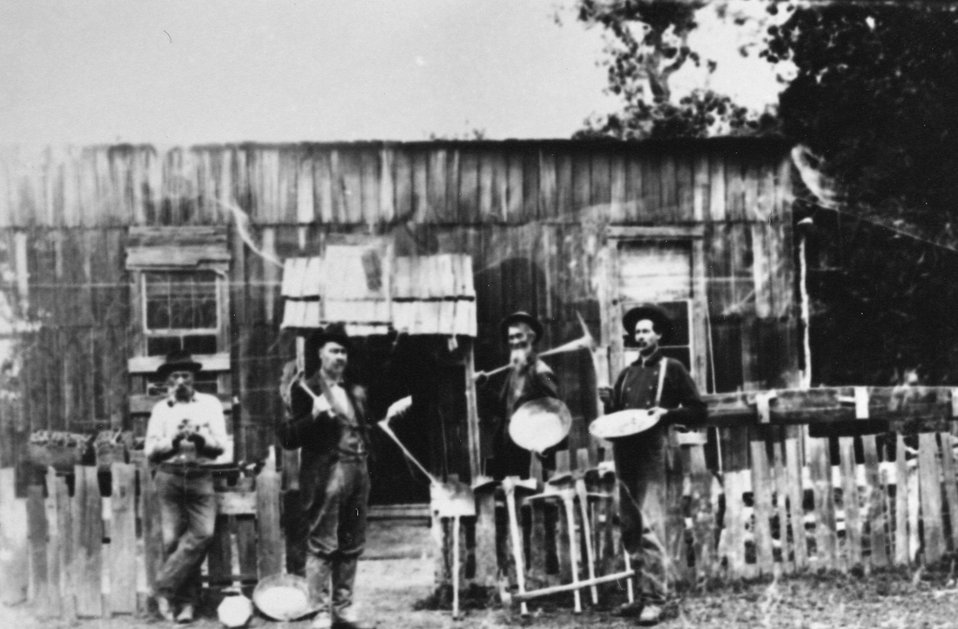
Gold panners not in the Rogue River Area